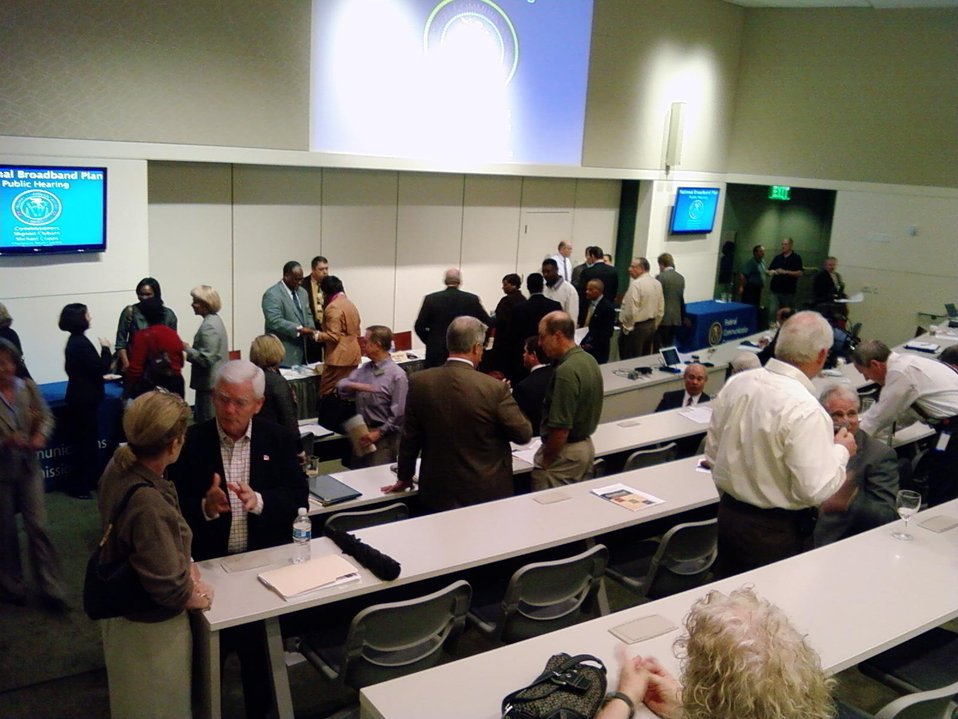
Field Hearing on Broadband Adoption 10-6-09